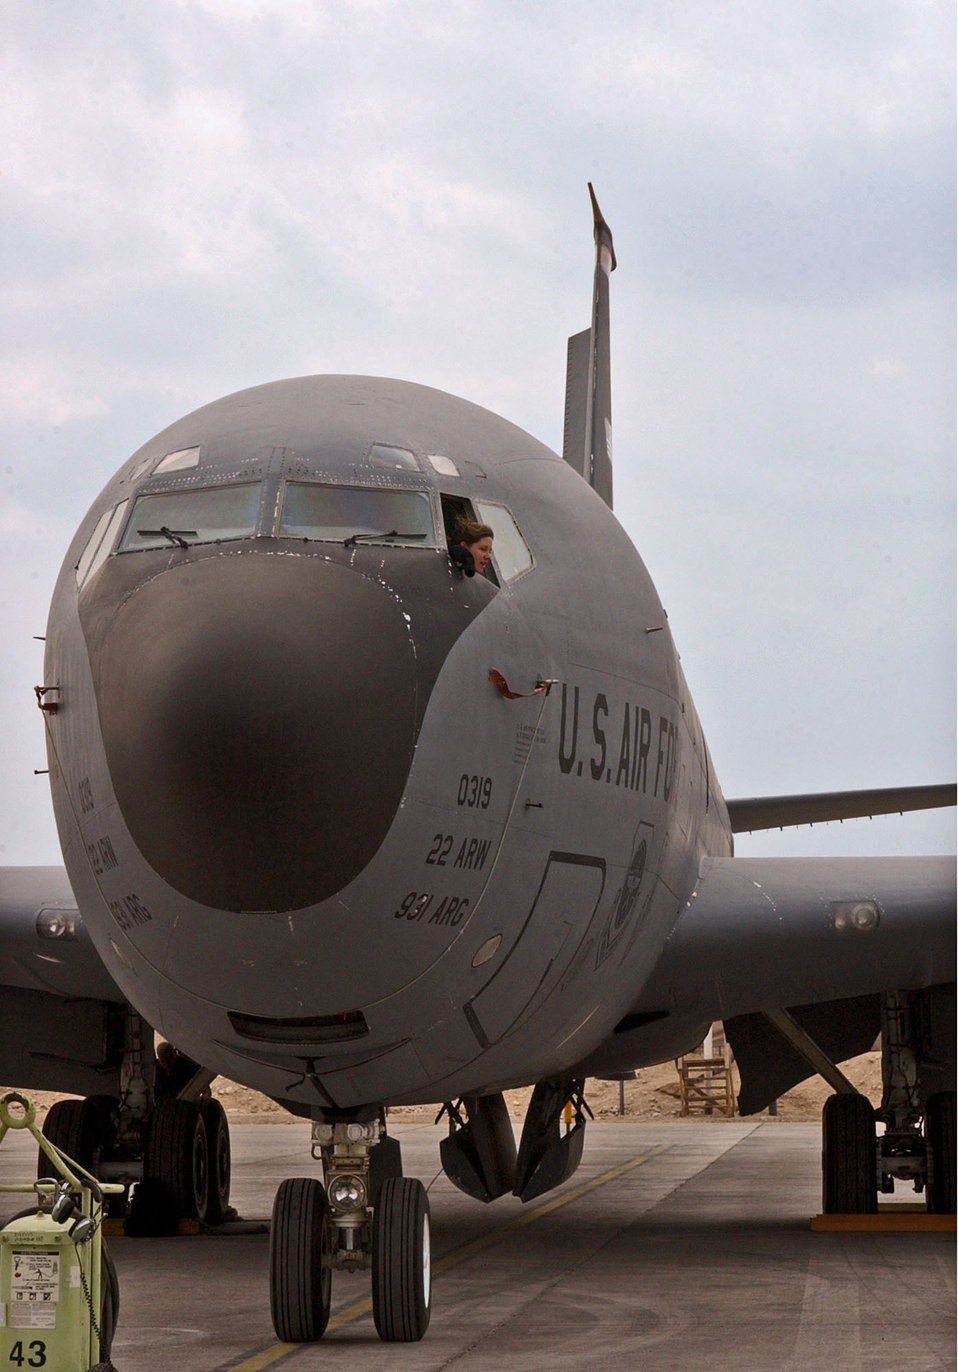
Watchful eye

SOUTHWEST ASIA -- An Airman takes a look outside from the inside of a KC-135 Stratotanker cockpit while preparing for a mission at a forward-deployed location in support of operations Iraqi Freedom and Enduring Freedom Jan. 11. The Airman is assigned to the 380th Air Expeditionary Wing.